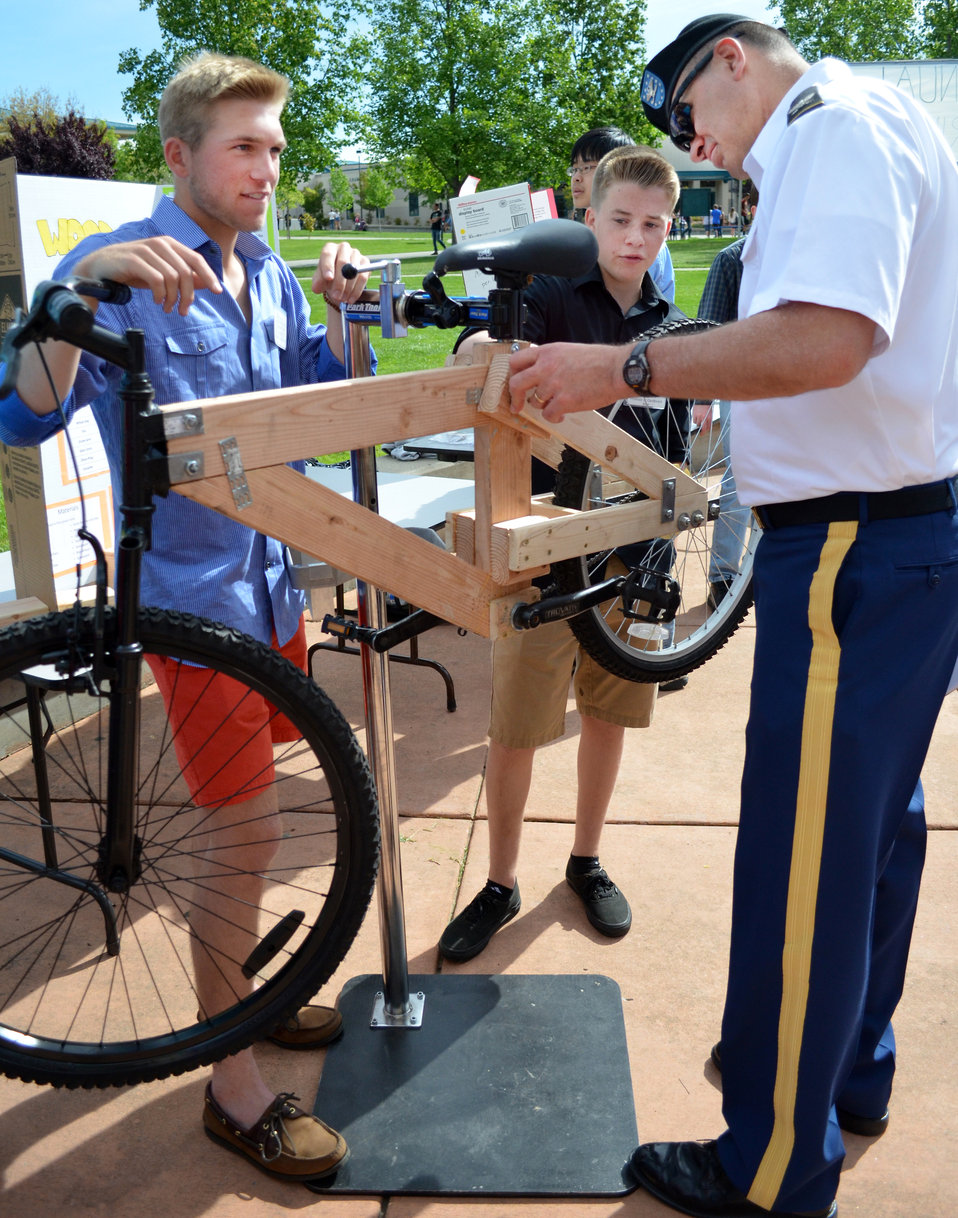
Wood it work?

Col. Bill Leady, commander of the U.S. Army Corps of Engineers Sacramento District, discusses a wooden bike with the students who assembled it for competition in the sixth annual Folsom High School Engineering Challenge in Folsom, Calif, April 19, 2013. A half dozen personnel from the U.S. Army Corps of Engineers Sacramento District took part as judges for the event that promotes careers in science, technology, engineering and math. Photo cropped for emphasis.